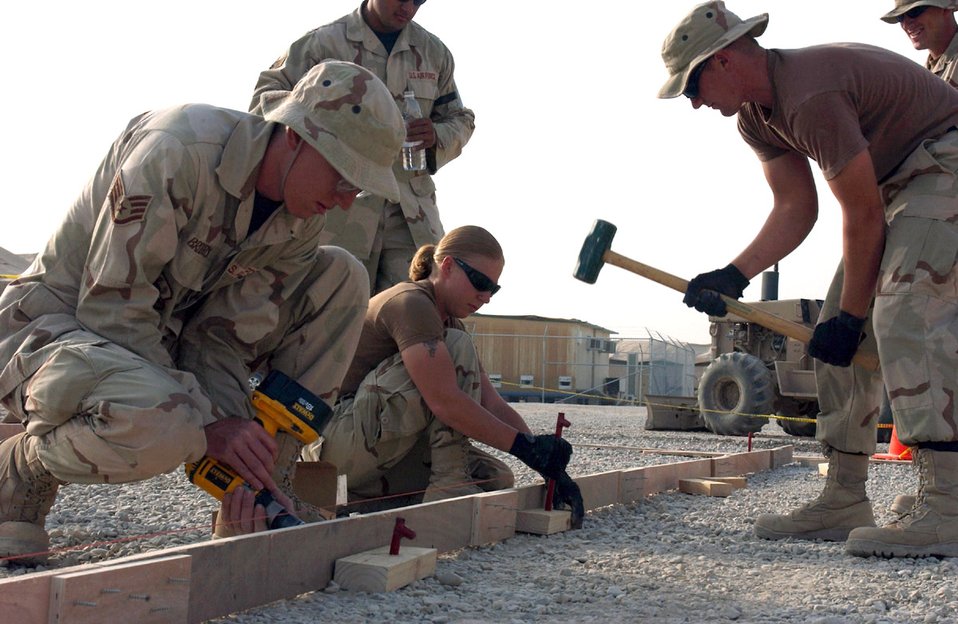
New additions

ALI BASE, Iraq (AFPN) -- Airmen from the 407th Expeditionary Civil Engineer Squadron are building concrete forms for a new aerobics area here. The work is part of a new services facility project.